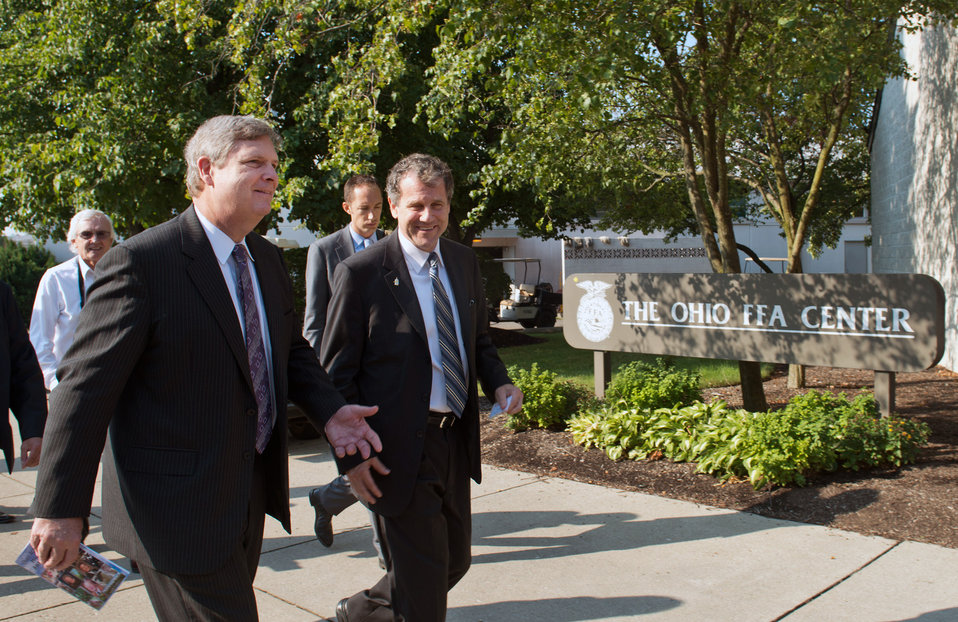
Agriculture Secretary Tom Vilsack walks to the Ohio FFA Center with Ohio Senator Sherrod Brown to hold media interviews in Columbus, OH on Friday, August 3, 2012.